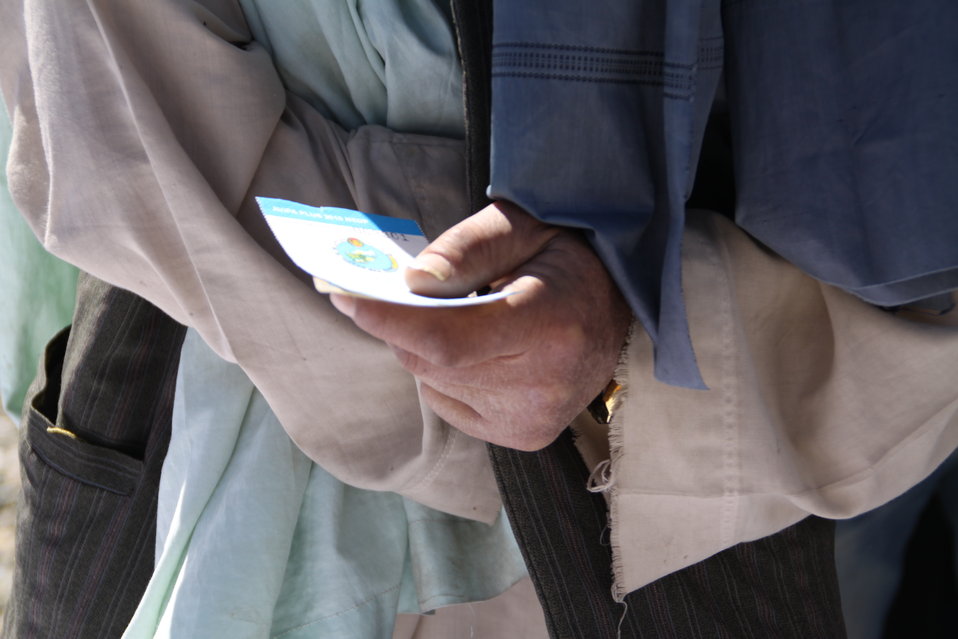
AVIPA Plus Wheat Seed Distribution 101005

US Ambassador Karl Eikenberry and USAID Acting Mission Director Kevin Brownawell joined the Minister of Agriculture, Irrigation and Livestock, H.E. Minister Mohammed Rahimi in signing a Memorandum of Understanding and distributing vouchers to area farmers for wheat and fertilizer.

US Ambassador Karl Eikenberry and USAID Acting Mission Director Kevin Brownawell joined the Minister of Agriculture, Irrigation and Livestock, H.E. Minister Mohammed Rahimi in signing a Memorandum of Understanding and distributing vouchers to area farmers for wheat and fertilizer.